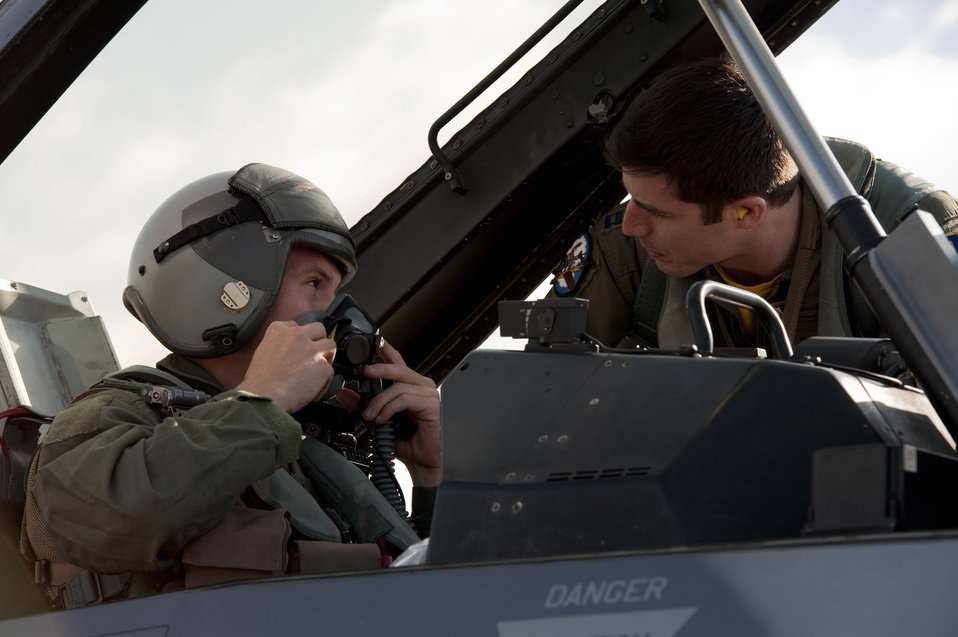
Misawa Airmen earns flight of his life

Staff Sgt. Bernard Mutz (left) and Capt. Chris Nations, 14th Fighter Squadron standardization and evaluations officer, prepare to take off in an F-16 Fighting Falcon at Misawa Air Base, Japan, Oct. 22, 2010. Sergeant Mutz said he enjoyed seeing the fall colors in the Hokkaido Mountains during his flight. He is a readiness and emergency manager with the 35th Civil Engineer Squadron.